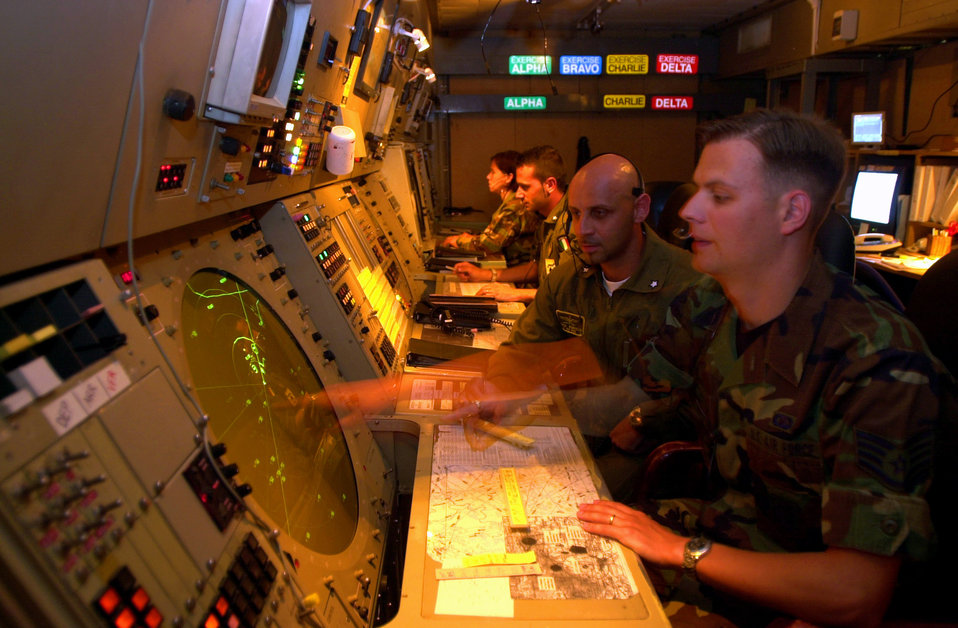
Controlling Aviano Air Base airspace

Italian and U.S. Air Force radar controllers, Staff Sgts. Marcello Zappia (left) and Matthew Sandner, communicate through a vast network of people and equipment within the radar approach control or RAPCON at Aviano Air Base, Italy, in June 2003. The RAPCON prevents the safe operation of aircraft in the base's air space, coordinates the movements of air traffic and minimizes the delay of aircraft traveling in and out of the airspace. Sergeant Sandner is assigned to the 31st Operations Support Squadron.